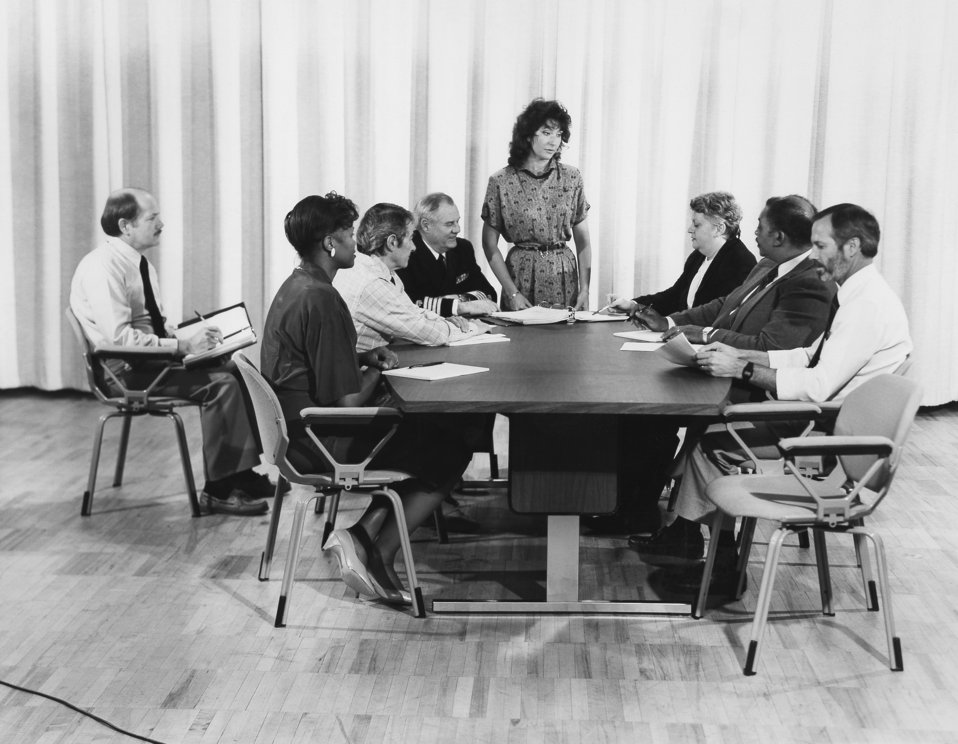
This photograph was taken for an exhibit in 1987 to portray a project team at work; 2004 DPDE Director, Nona Gibbs, is standing.